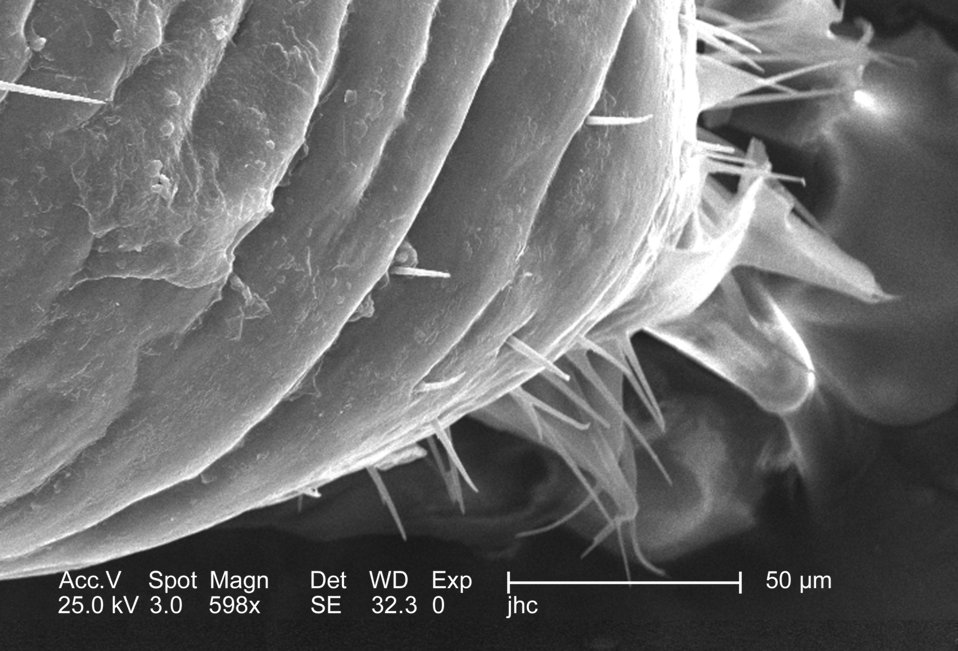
Magnified 598x, this 2006 scanning electron micrograph (SEM) depicted an enlarged view of the chitinous, exoskeletal surface of a male louse, Pediculus humanus var. corporis. In this particular view, the exoskeleton seems to be configured in 'accordion-like' convolutions, which is visible with the naked eye on the insect's abdomen. Chitin is a molecule made up of bound units of acetylglucosamine, which is joined in such a way as to allow for increased points at which hydrogen bonding can occur. In this way chitin provides increased strength, and durability as an exoskeletal foundation. Note the sparse amount of 'setae', or sensorial 'hairs' in this area of the abdominal surface.